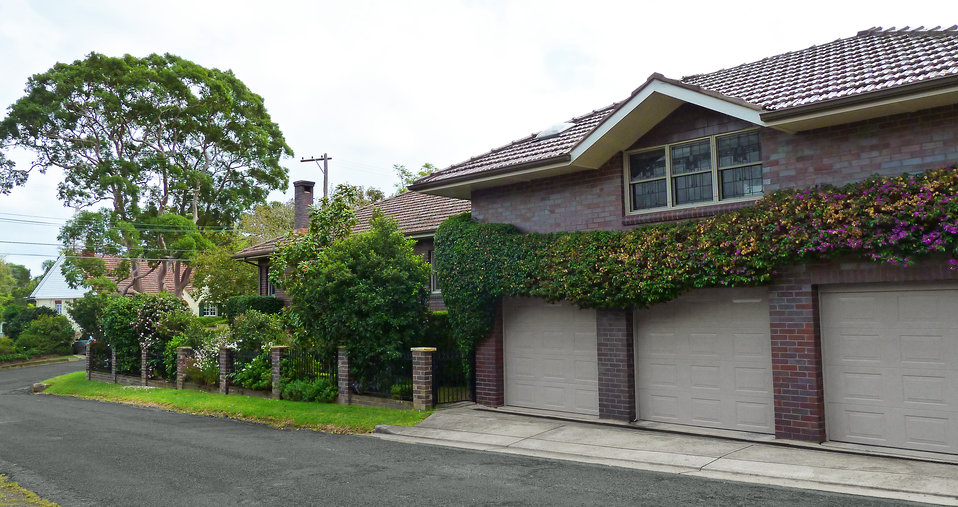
16 Kardella Avenue, Killara, New South Wales, Australia.